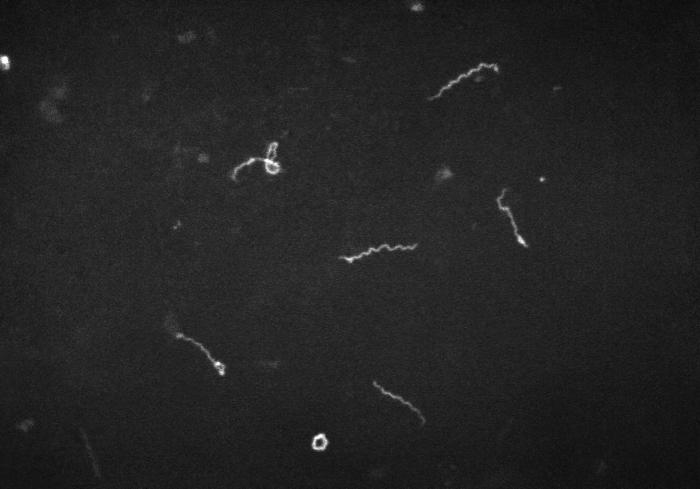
Using a 'darkfield' microscopy technique, this photomicrograph revealed the presence of Treponema pallidum spirochetes, which are the bacterial agents responsible for causing syphilis.'A diagnosis of syphilis is confirmed by using darkfield microscopy to demonstrate T. pallidum in material from suspected lesions, or regional lymph nodes (Creighton, 1990). A positive darkfield result is an almost certain diagnosis of primary, secondary, or early congenital syphilis. In primary syphilis, the darkfield examination may provide a means by which to identify the etiologic agent of syphilis and diagnose the disease before antibodies to T. pallidum can be detected.'